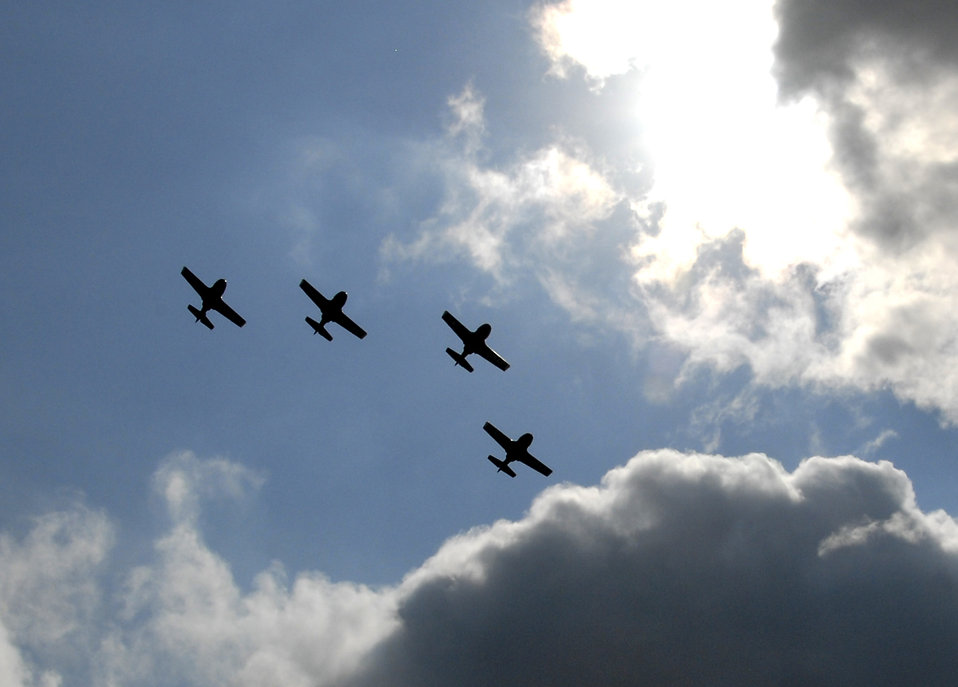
T-37s retire

Four of the last seven T-37 Tweets perform a flyover July 31 at Sheppard Air Force Base, Texas, during a ceremony that officially retired the primary trainer. The durable and reliable Tweet served as the introductory pilot training aircraft for more than half a decade.